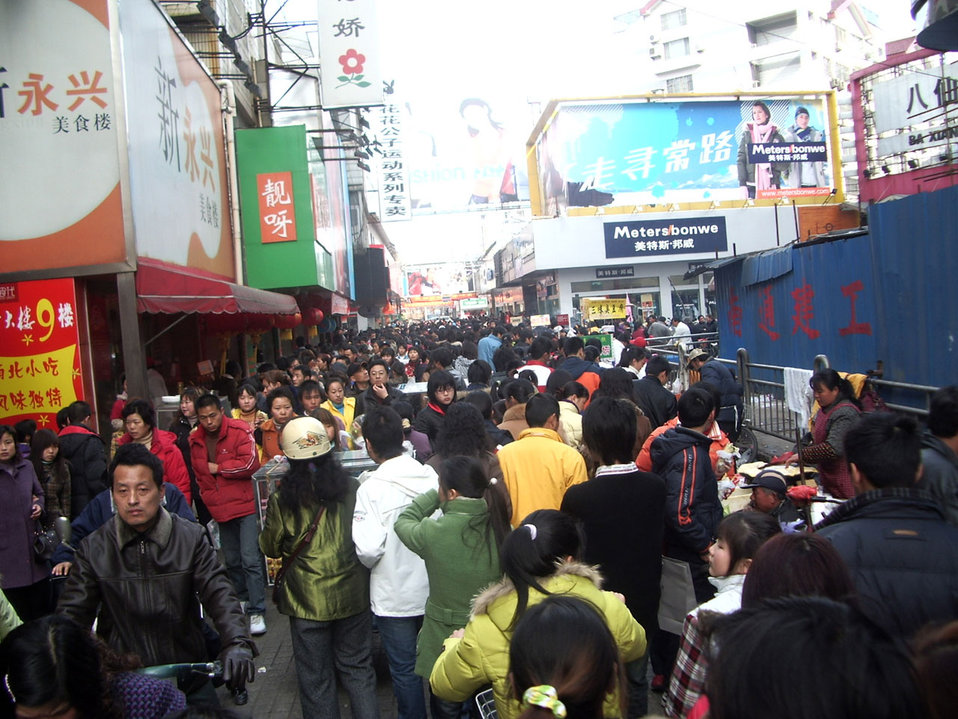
Busy street

Crowded street.